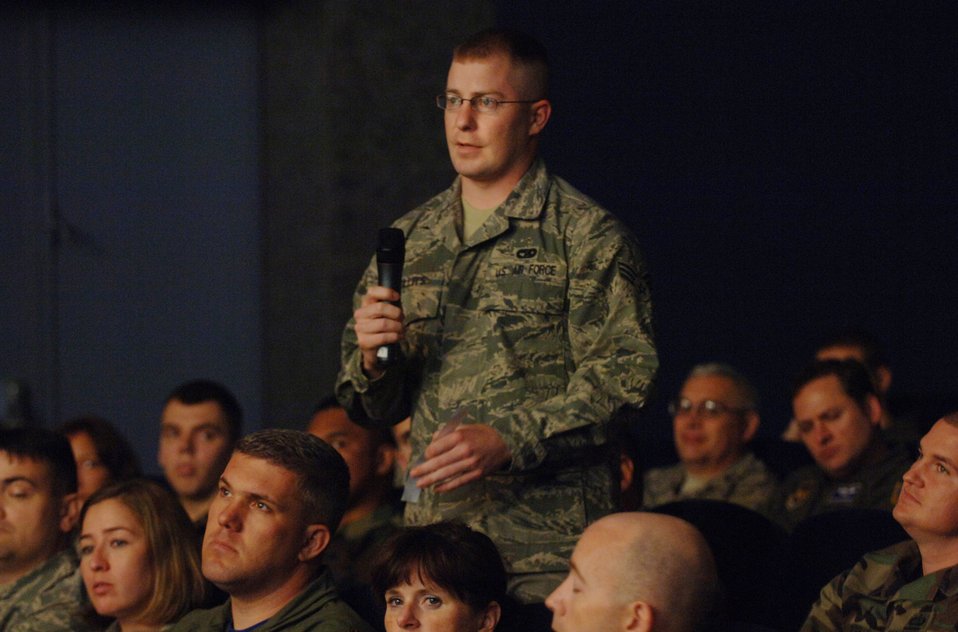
SECAF townhall meeting

Senior Airman Cory Willits poses a question to Secretary of the Air Force Michael B. Donley Oct. 10 during a townhall meeting at Ramstein Air Base, Germany. The secretary spoke to a crowd of more than 300 Airmen about the service's newest initiatives and priorities. Airman Willits is an air transportation specialist assigned to the 86th Air Mobility Squadron at Ramstein.